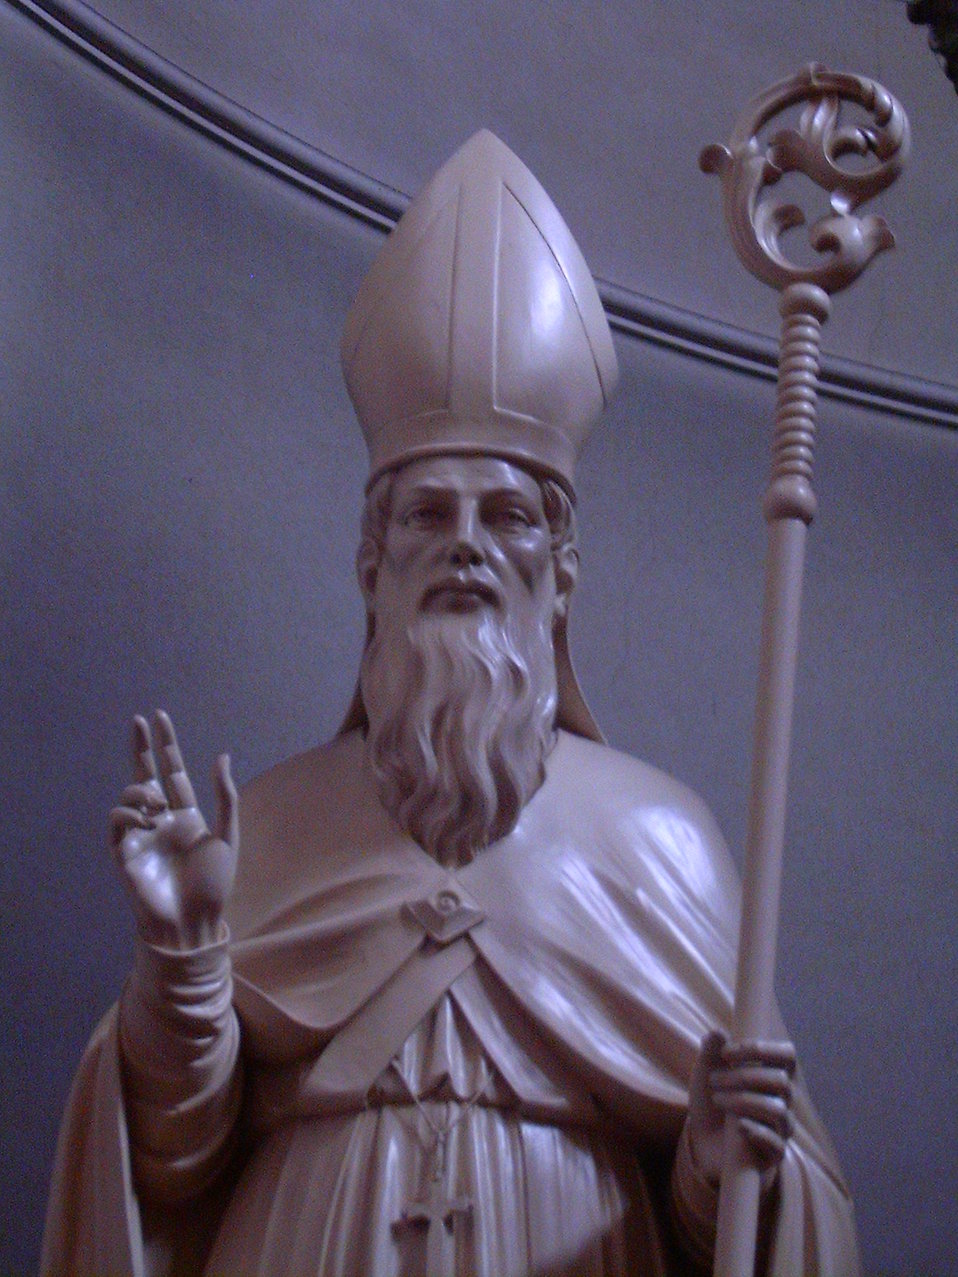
Italiano: La statua di S. Biagio.